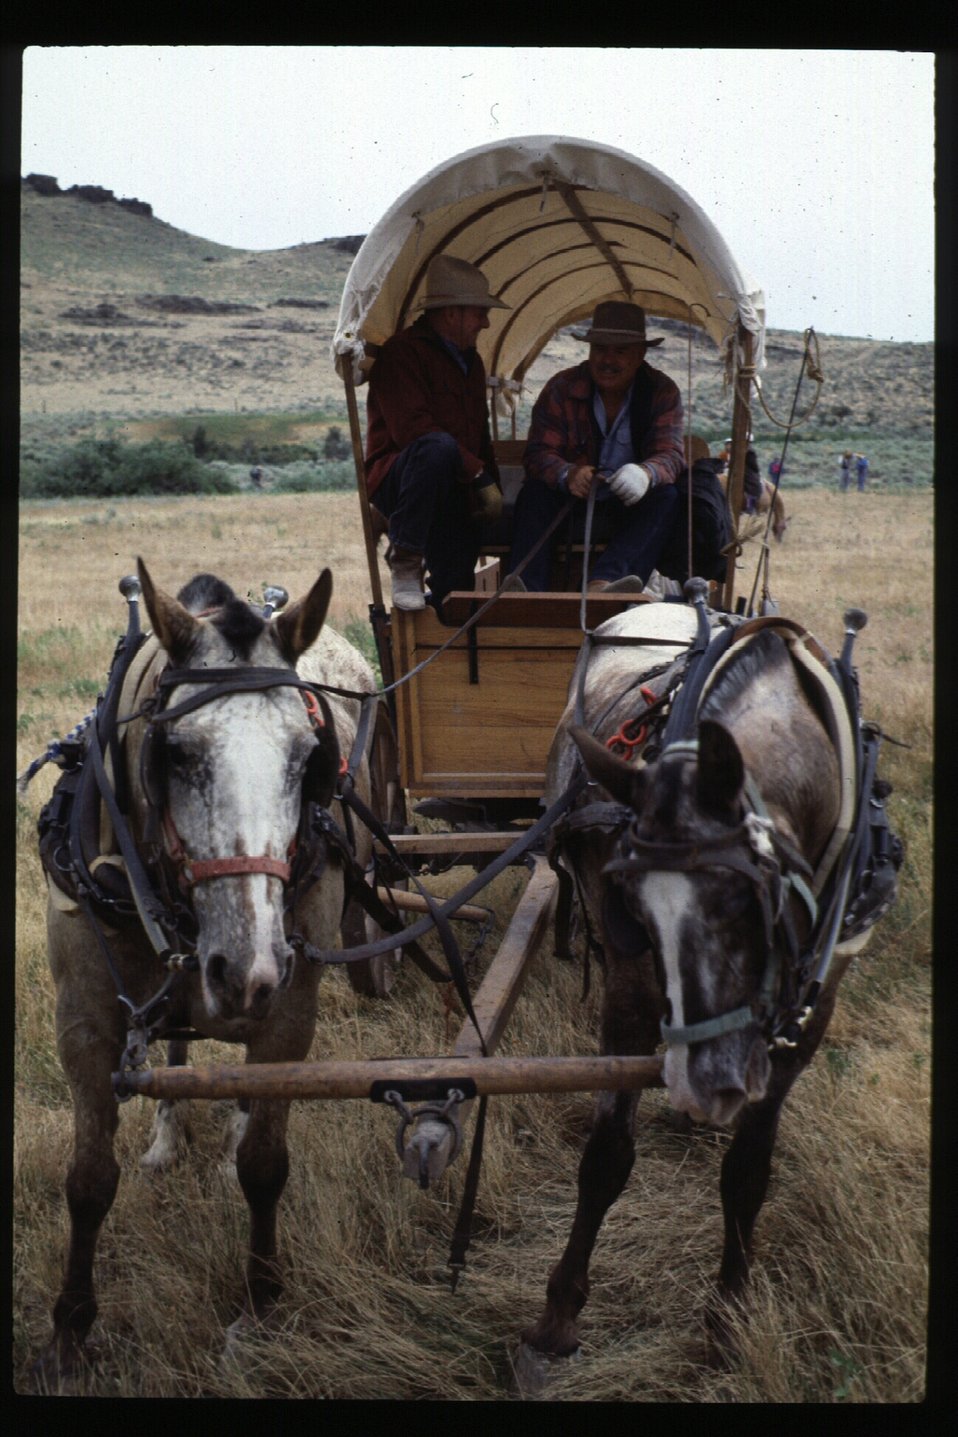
Wagon and horses Oregon Trail Reenactment Four Rivers Field Office LSRD Lower Snake River District